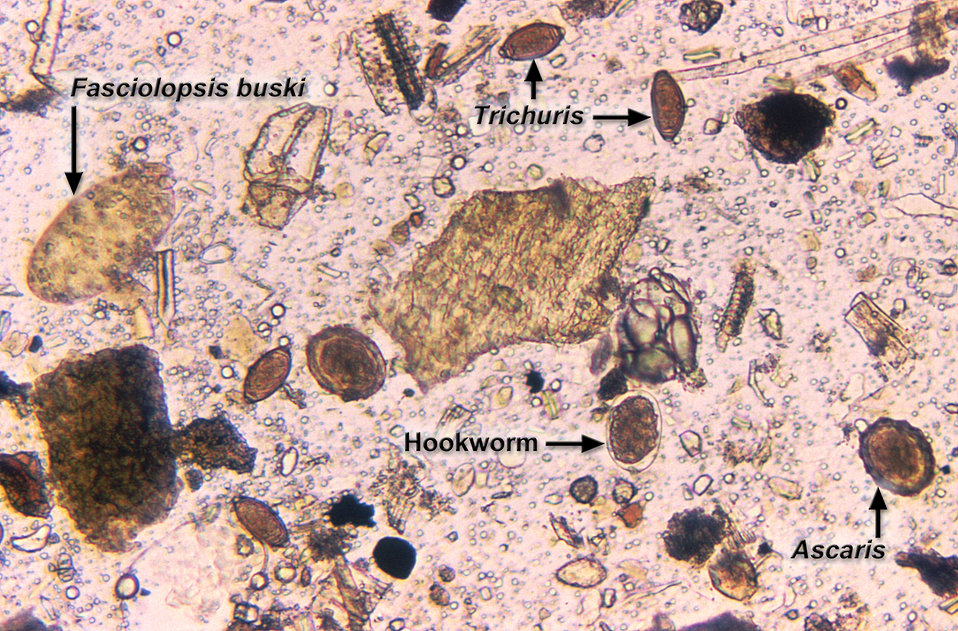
Under a magnification of 125x, this photomicrograph of an unstained mounted formalin-preserved fecal sample revealed the presence of a number of parasitic worm eggs, which included the eggs of a trematode, Fasciolopsis buski, an Ascaris sp. nematode, a Trichuris sp. nematode, and an unknown specie of nematodal hookworm, all for the purpose of a size comparison.